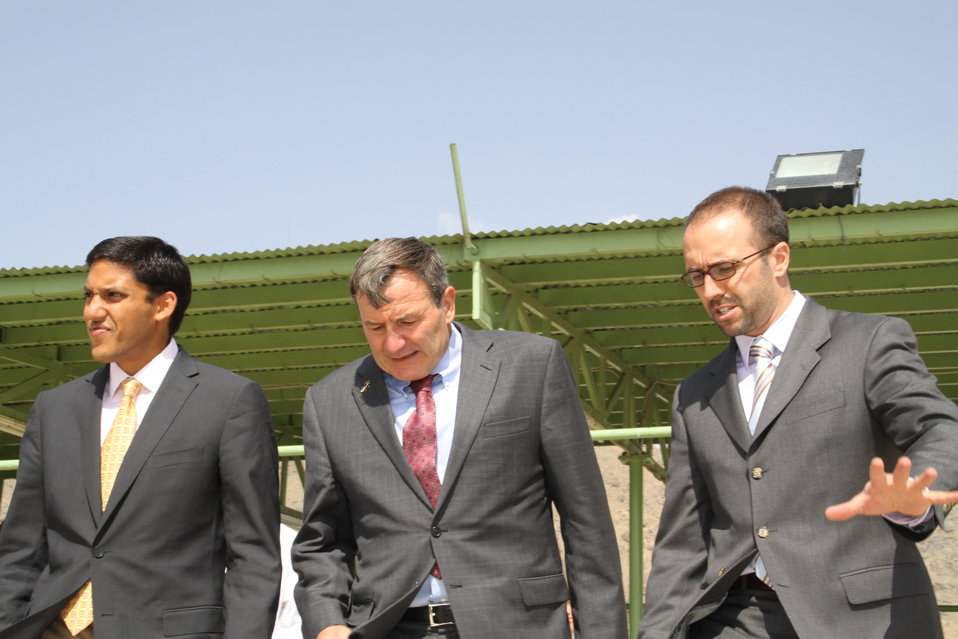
Badam Bagh Farm